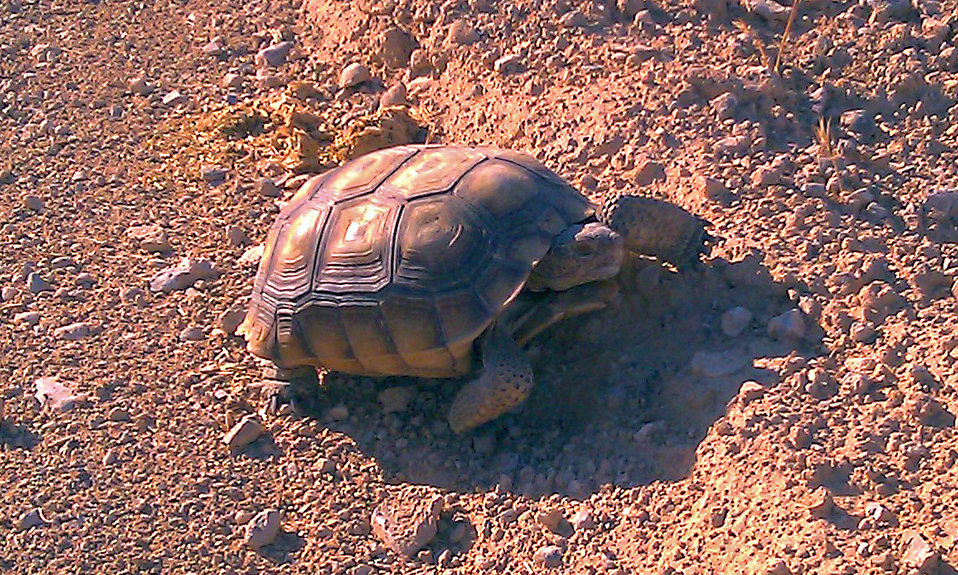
Desert Tortoise5

Desert tortoise near Las Vegas.